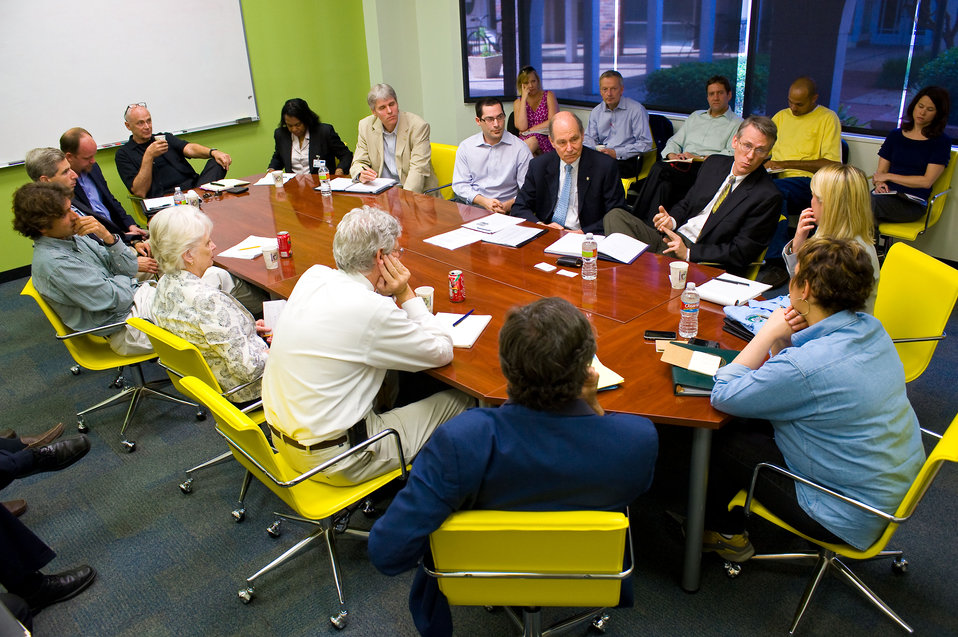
EPA Administrator Meets with Gulf Region Scientists

May 11, 2010 - EPA Administrator Lisa P. Jackson meets with Tulane University officials to discuss environmental and human health impact of the ongoing BP oil spill.